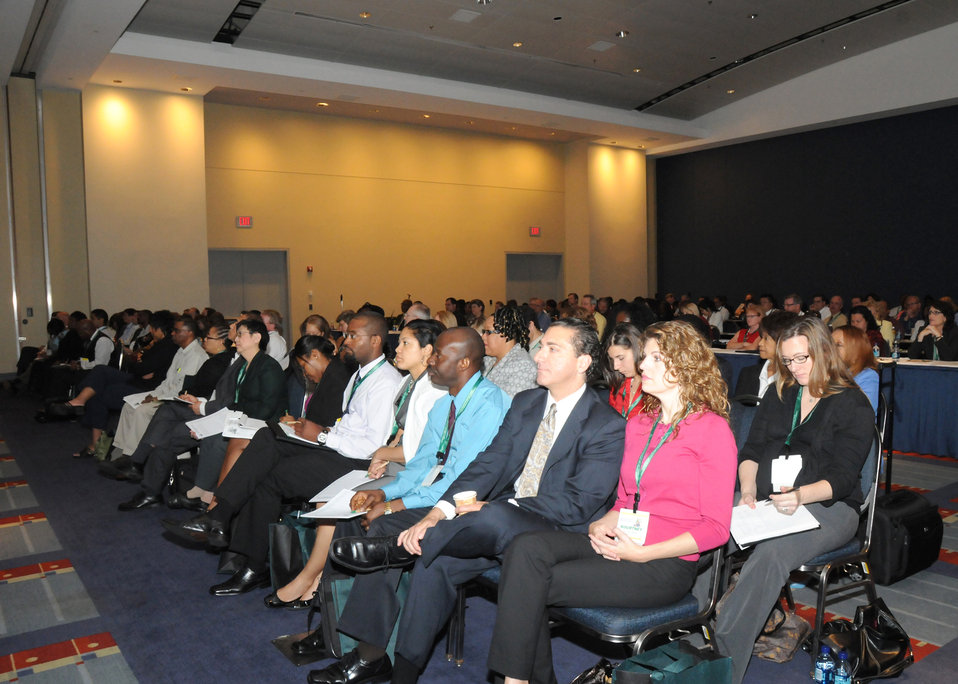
The Financial Management Training Conference held in Washington, D. C., on May 26-28, 2009 is attended by U. S. Department of Agriculture financial and budget personnel. USDA photo 10di1371-120.